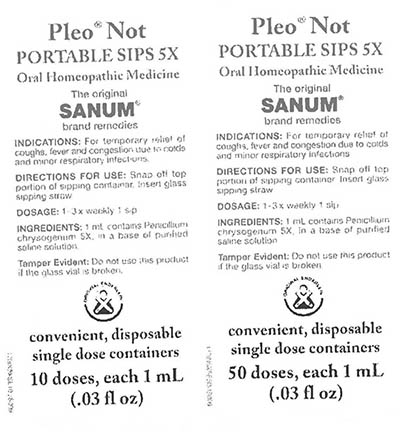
RECALLED – Homeopathic Drug Products

March 18, 2014 – Product Recall – Terra-Medica Issues Voluntary Nationwide Recall of Specified Lots of Pleo Homeopathic Drug Products Due to the Potential for Undeclared Penicillin.